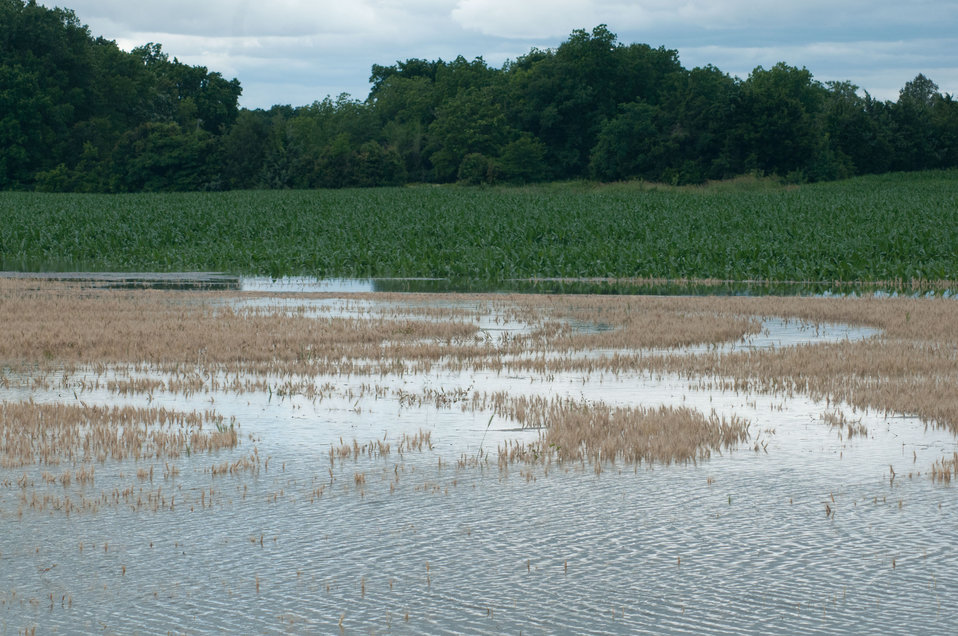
To save crops that threatened by Mississippi River floodwaters farmers harvested wheat two weeks early from the Yazoo River area of MS near Yazoo City, MS, on Monday, May 16. 2011.